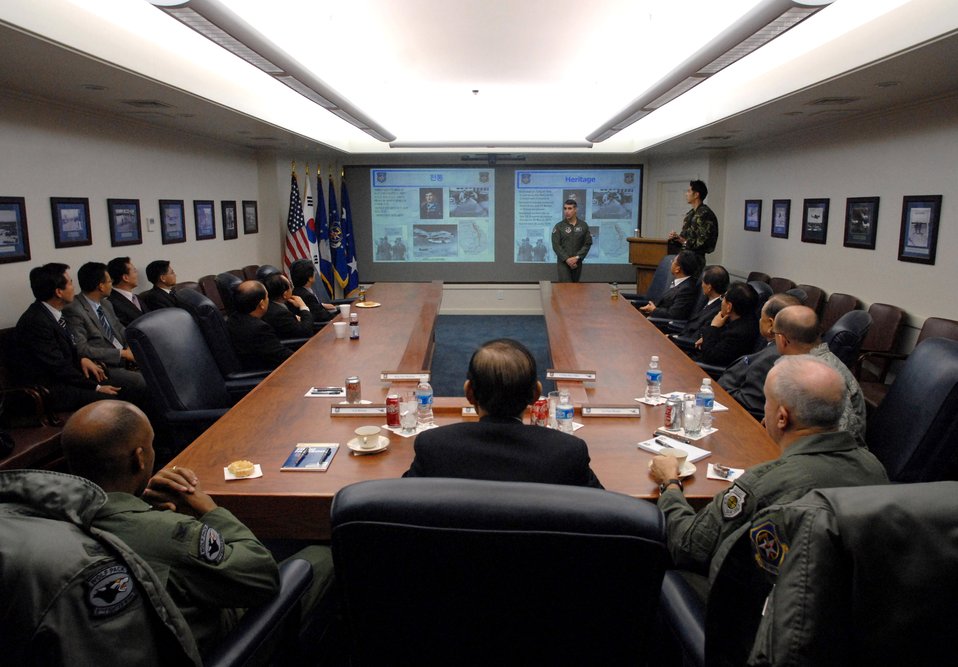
South Korean civic leaders gain insight on Air Force mission

Gunsan Mayor Dong Shin Moon (back center) and other Gunsan civic leaders meet with Lt. Gen. Stephen G. Wood (back left) and Col. CQ Brown (back right) Jan. 8 at Osan Air Base, South Korea. General Wood is the 7th Air Force commander and Colonel Brown is the 8th Fighter Wing commander. Officials from 7th Air Force hosted Gunsan civic leaders in support of the Good Neighbor Program where Kunsan Air Base, South Korea, is educating local civic leaders on the 7th Air Force and 8th Fighter Wing missions while demonstrating how the U.S. Air Force works and trains with South Korean to maintain peace and stability in the region.